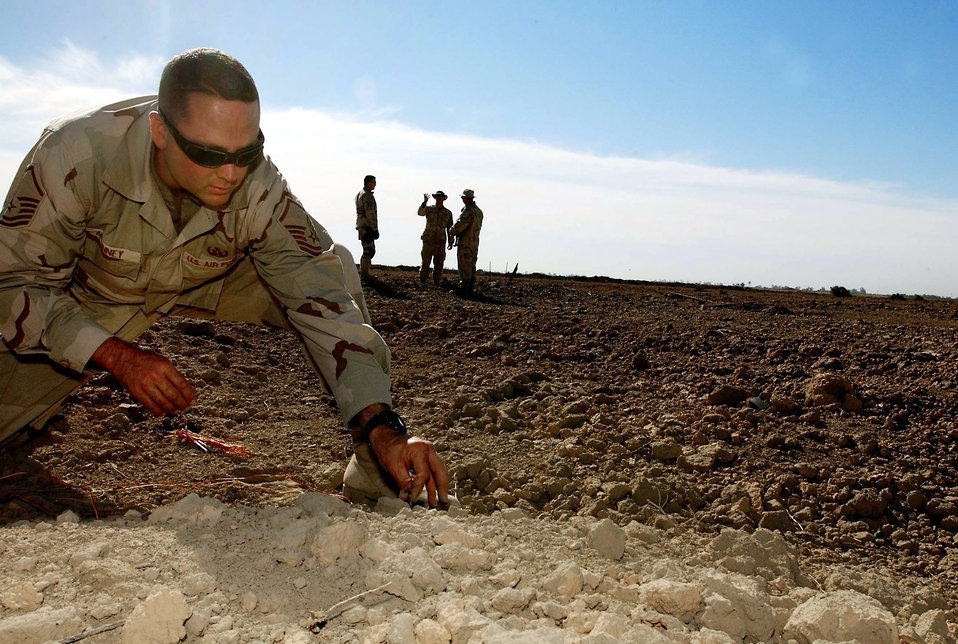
Iraqi Freedom

BAGHDAD INTERNATIONAL AIRPORT, Iraq -- Master Sgt. Bradley McKinney prepares a detonation site here, where seized ordnance and improvised explosive devices were destroyed, Nov. 15. McKinney is an explosive ordnance disposal technician with the 447th Air Expeditonary Civil Engineer Squadron.